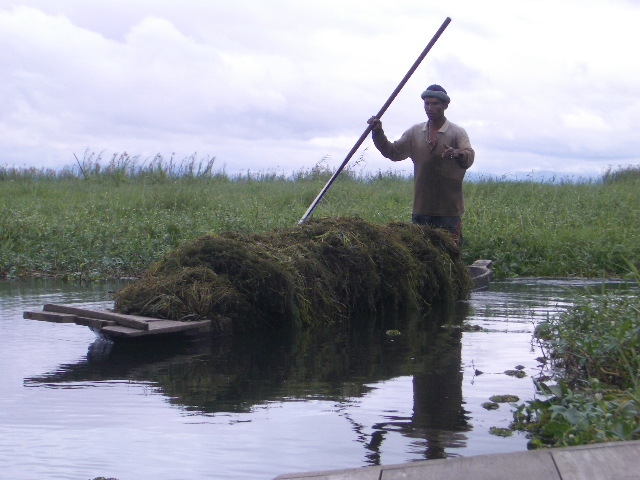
Uploaded by request of Snehasis Das

Taken at Loktak Lake, Manipur, India

This is my job